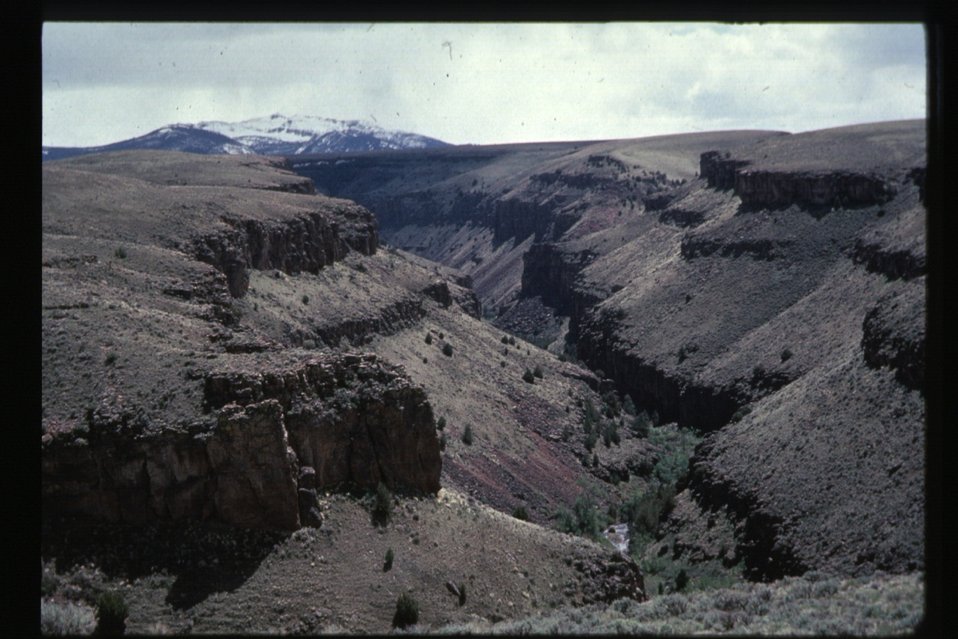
Jarbidge River and Jarbidge Mountains Jarbidge Field Office LSRD Lower Snake River District